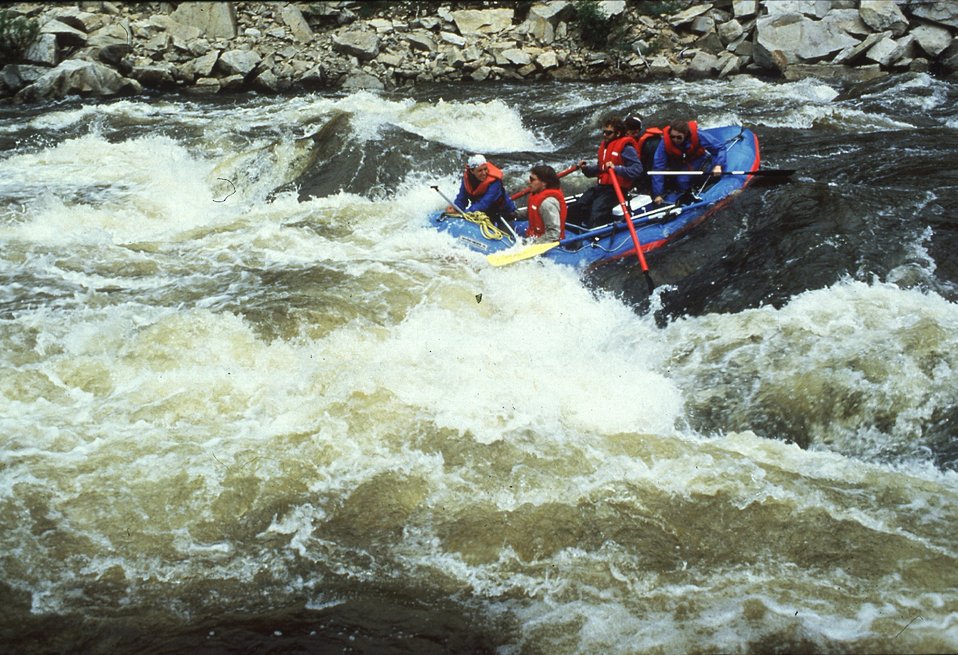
Canyon Rapids, Gulkana NWSR